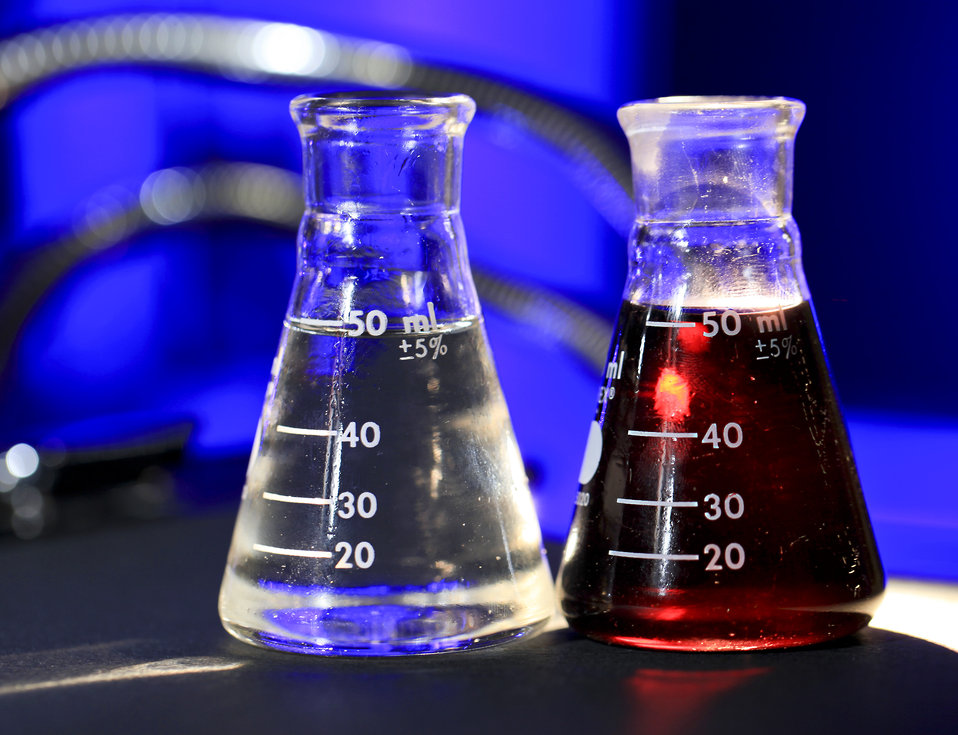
Ionic liquids in vials at Oak Ridge National Laboratory.